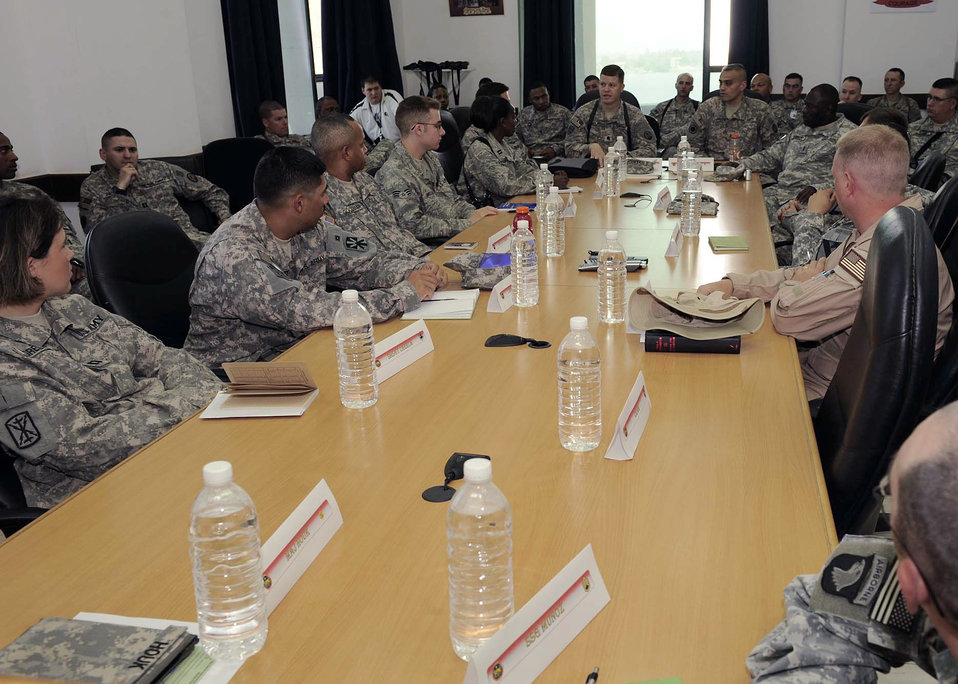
Joint airspace conference takes place in Iraq

Members of Multinational Corps-Iraq came together at the Joint Airspace Interoperability Synchronization Conference May 30 at Camp Victory, Iraq. Key players from the Army, Air Force and civilians from all over Iraq and the Combined Air Operations Center discuss the complexities of managing the joint air picture and how to improve joint tactics, techniques and procedures.